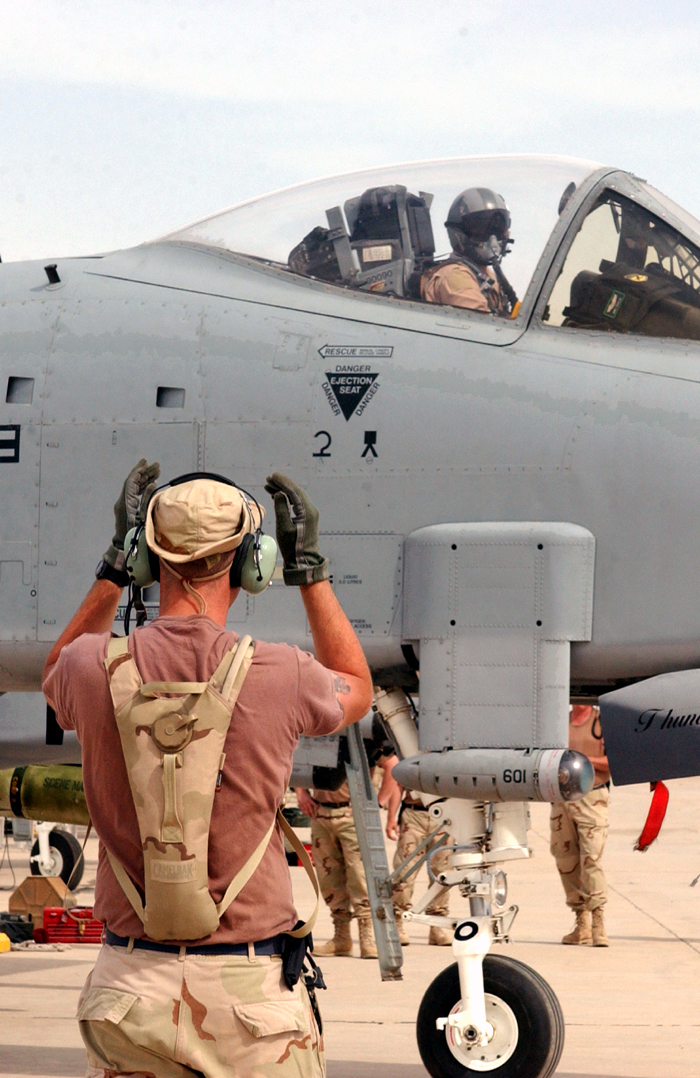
To the fight

OPERATION IRAQI FREEDOM -- Tech. Sgt. Don Hardway, an aircraft crew chief with the 442nd Fighter Wing, communicates with pilot 1st Lt. Mike Sadler before the April 18 launch of an A-10 on a combat mission over Iraq. The 442nd is from Whiteman Air Force Base, Mo., and is deployed to Tallil Air Base in southern Iraq.